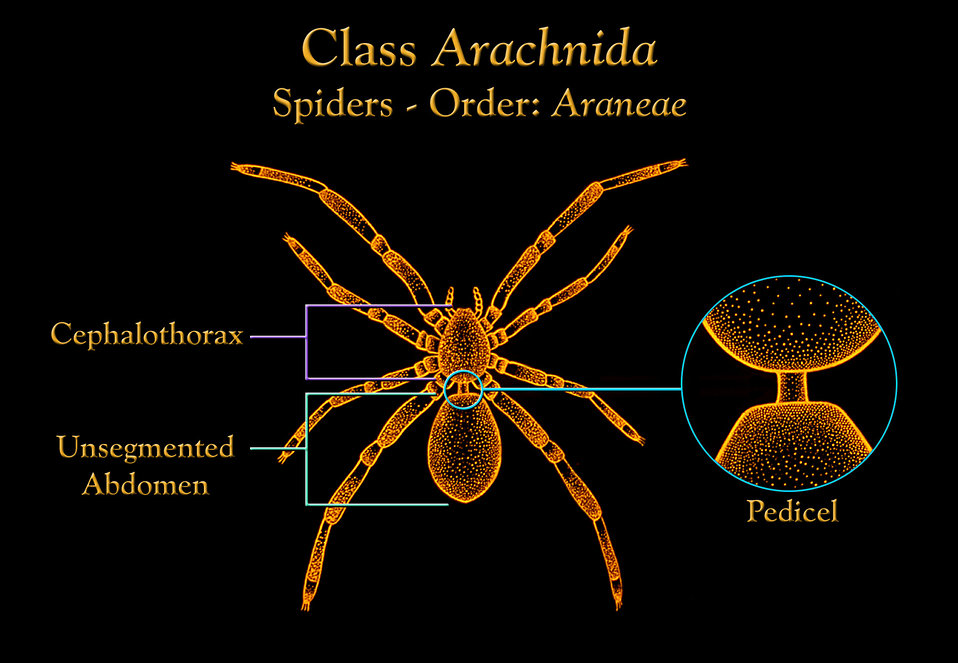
This illustration depicts the anatomic features found in spiders, members of the Class Arachnida, Order Araneae.